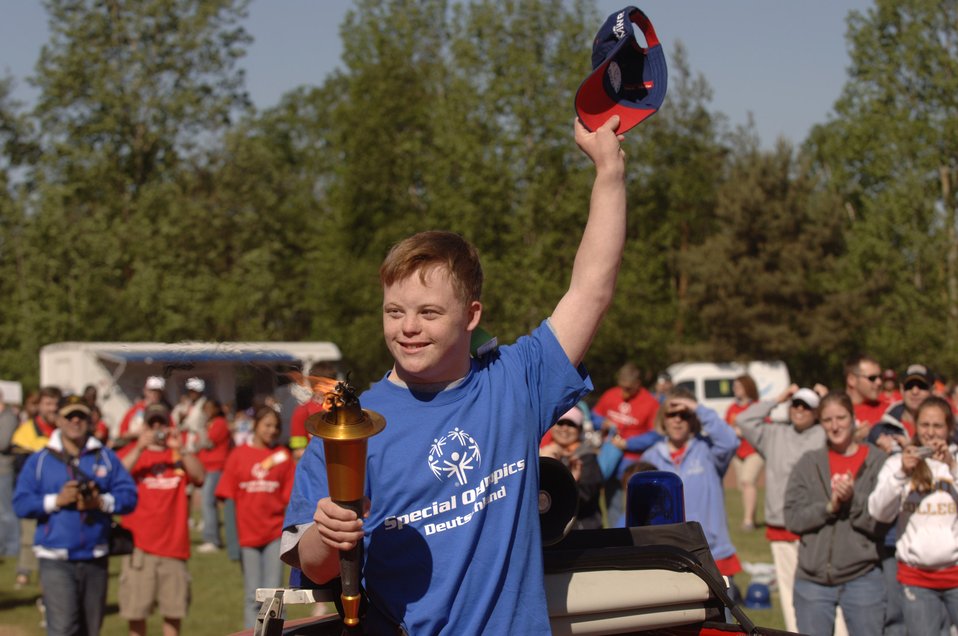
Airmen make olympics special

Bryan Hogg of Kaiserslautern High School carries the ceremonial torch during the opening ceremonies of the 2007 Special Olympic Games May 2 in Enkenbach-Alsenborn, Germany. Numerous German and American volunteers from the Kaiserslautern military community assisted more than 750 Special Olympians who competed in the 24th annual games here.